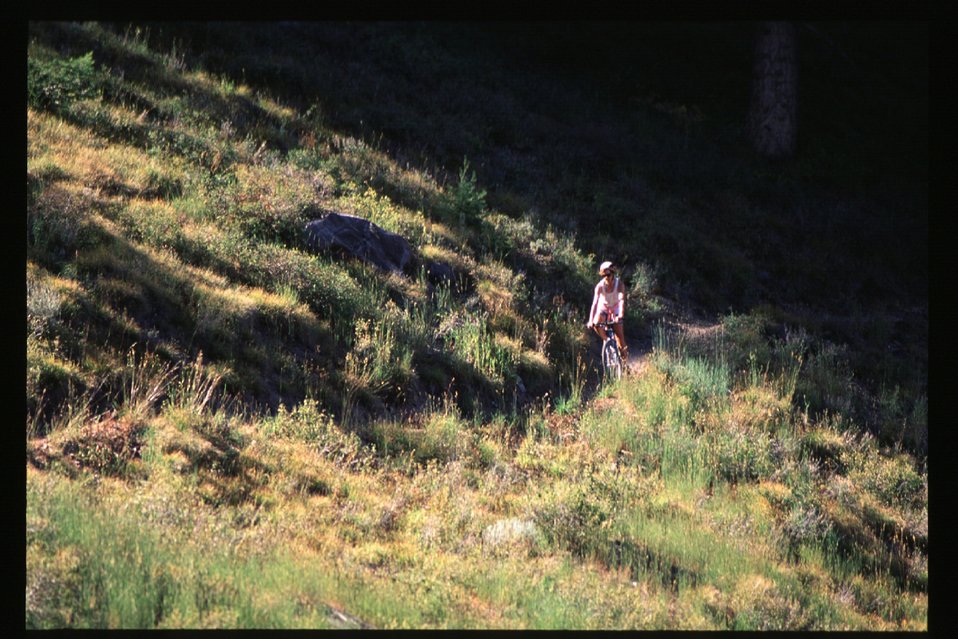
Recreation Scenic Biker Shoshone Field Office USRD Upper Snake River District